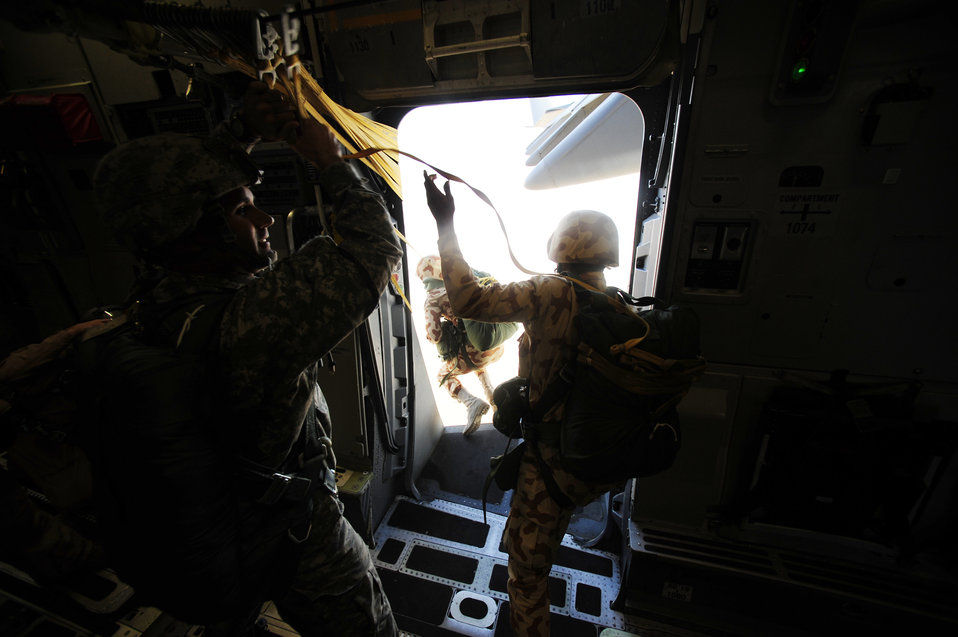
Friendship jump over Egypt

Paratroopers begin their